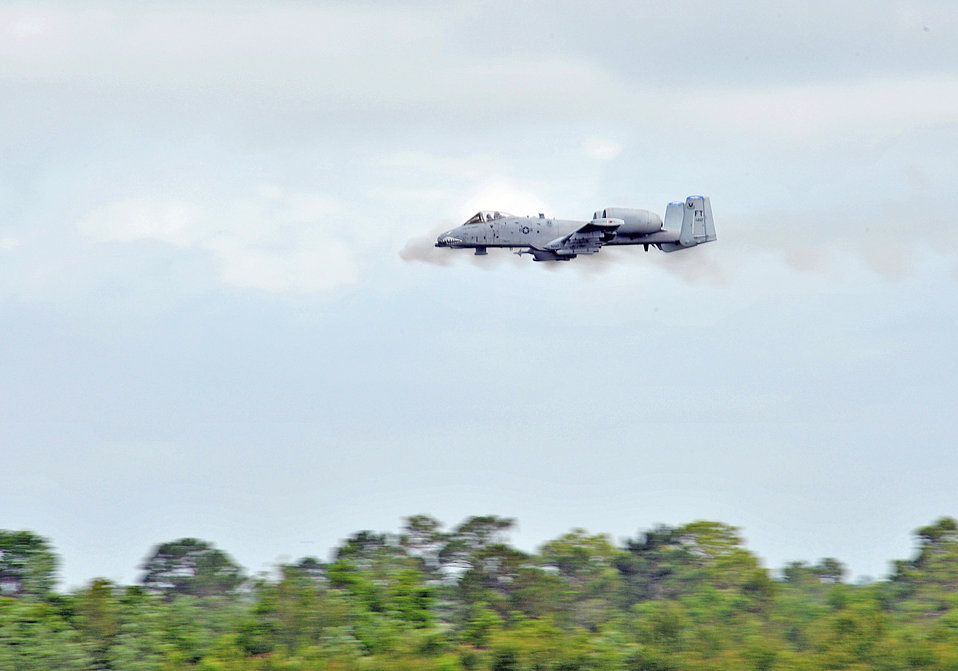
Moody A-10s to receive new sniper pods

An A-10 Thunderbolt II from the 75th Fighter Squadron engages with a simulated enemy element that is closing in on the position of a downed pilot who is awaiting rescue during a live-fire and rescue demonstration May 15 at Moody Air Force Base, Ga.